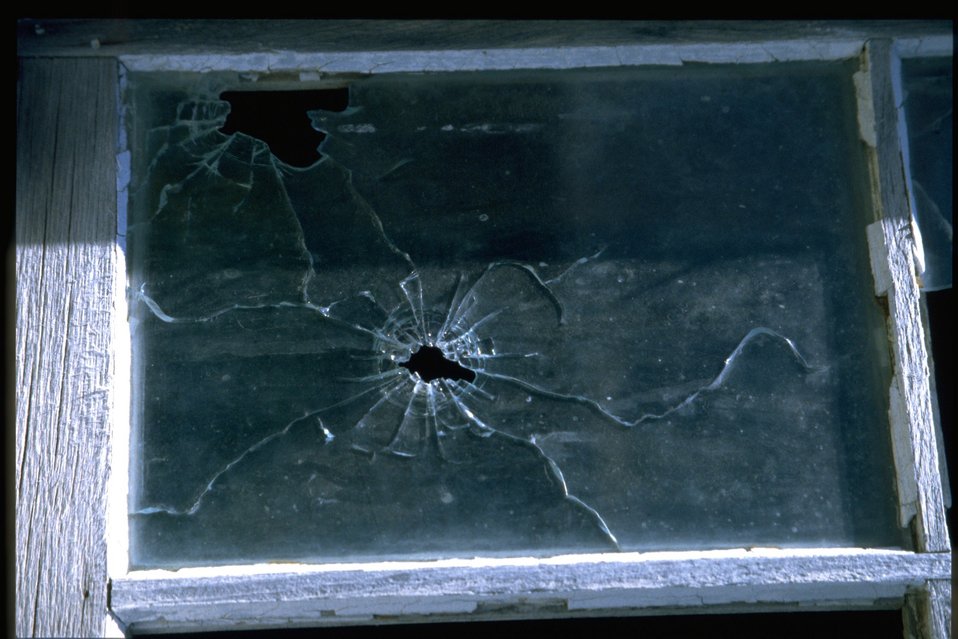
Window pane with bullet hole at Shirk Ranch.